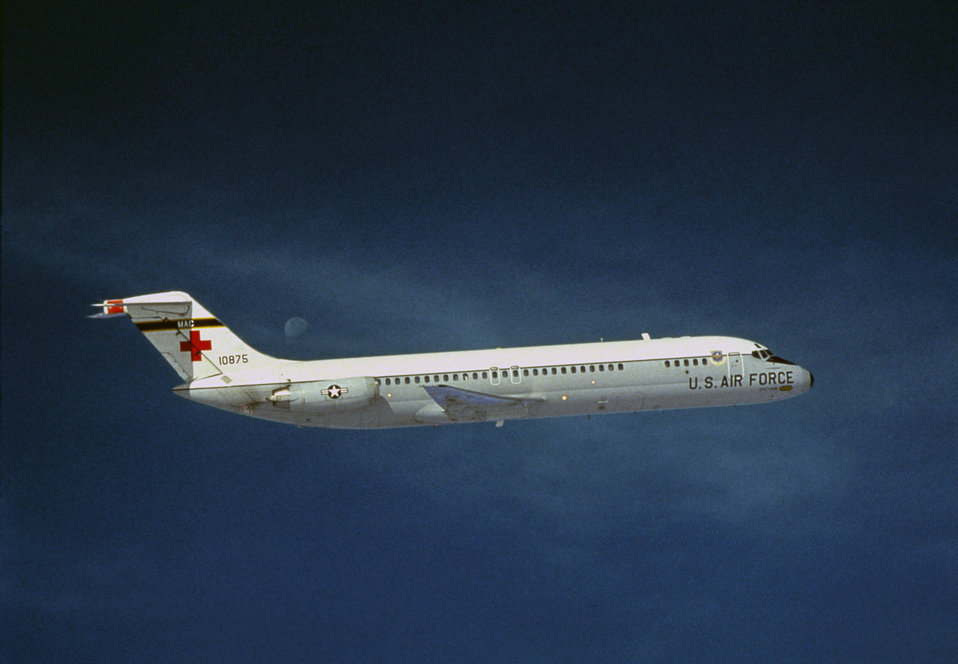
C-9 Nightingale

1960s -- The C-9 Nightingale flew special aeromedical evacuation missions. The aircraft deployed August 1968 and its medical mission was retired August 2003.